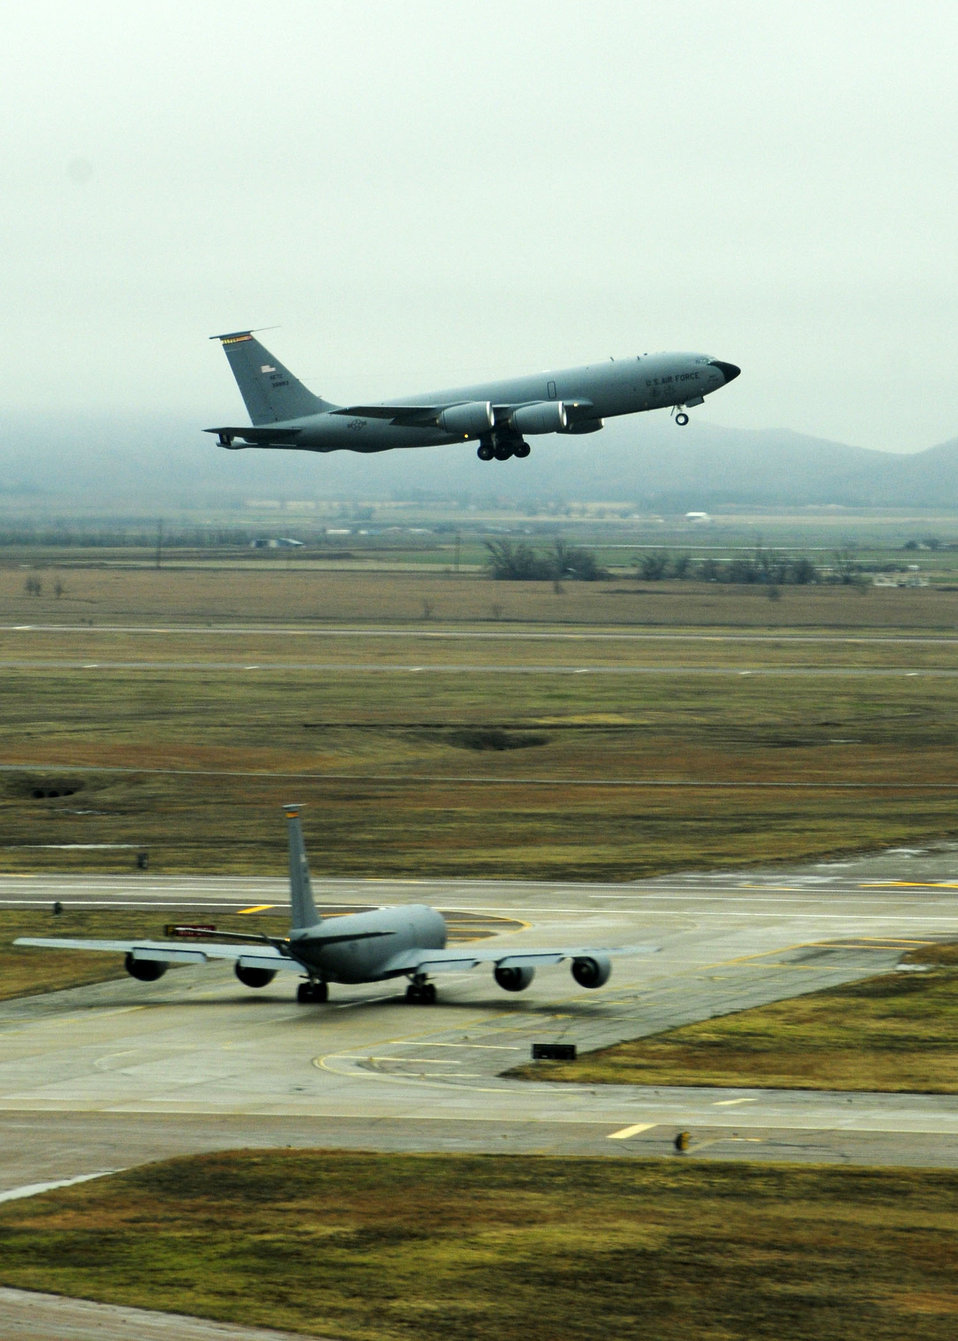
KC-135 Stratotankers take off from Altus Air Force Base

KC-135 Stratotankers take off Feb. 4, 2010, from Altus Air Force Base, Okla., to Lackland AFB, Texas. The KC-135s are relocating to the Lackland AFB area to continue flight training for Altus AFB pilots because of the severe ice storm that swept through Altus AFB Jan. 28.